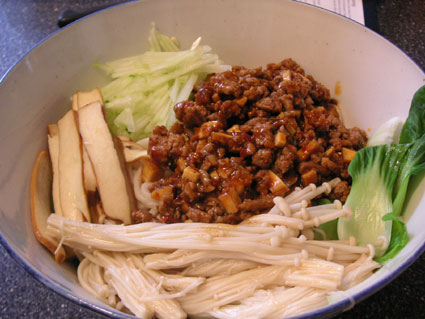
dan dan mian. PlateOfTheDay.com Food Blog